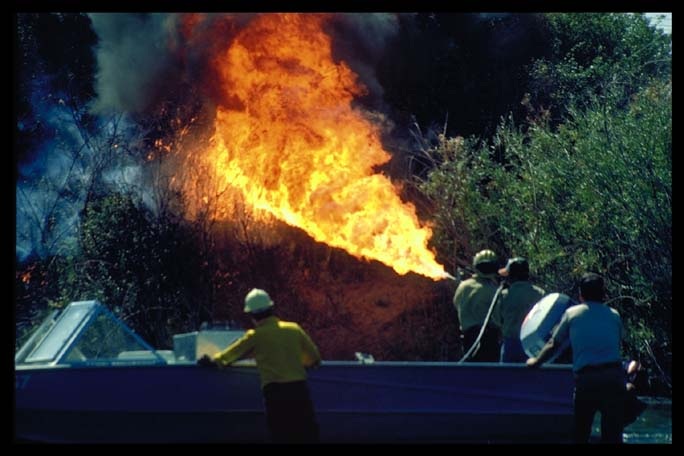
Prescribed fire